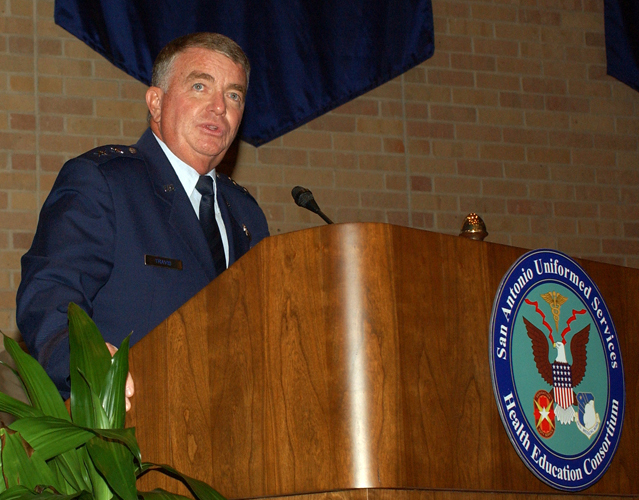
Wilford Hall Commander speaks at graduation

59th Medical Wing Commander Maj. Gen. (Dr.) Thomas Travis speaks to graduates at the San Antonio Uniformed Services Health Education Consortium awards and graduation ceremony June 6 in the University of Texas Health Science Center at San Antonio Auditorium. The ceremony honored 241 physicians and allied health care providers.